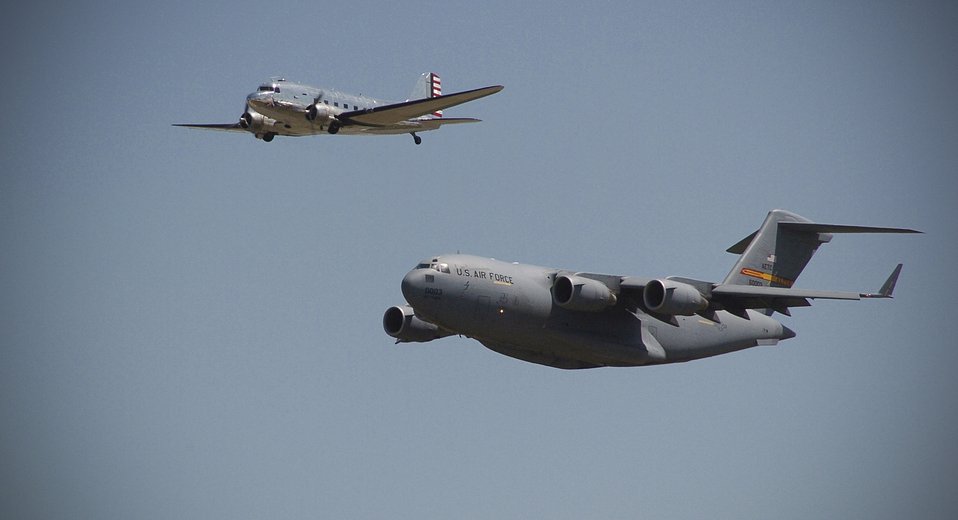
All grown up

Flying a heritage flight over Altus Air Force Base, Okla., May 3, a C-17 Globemaster III and C-47 Skytrain participate in the base's open house and air show. The C-47